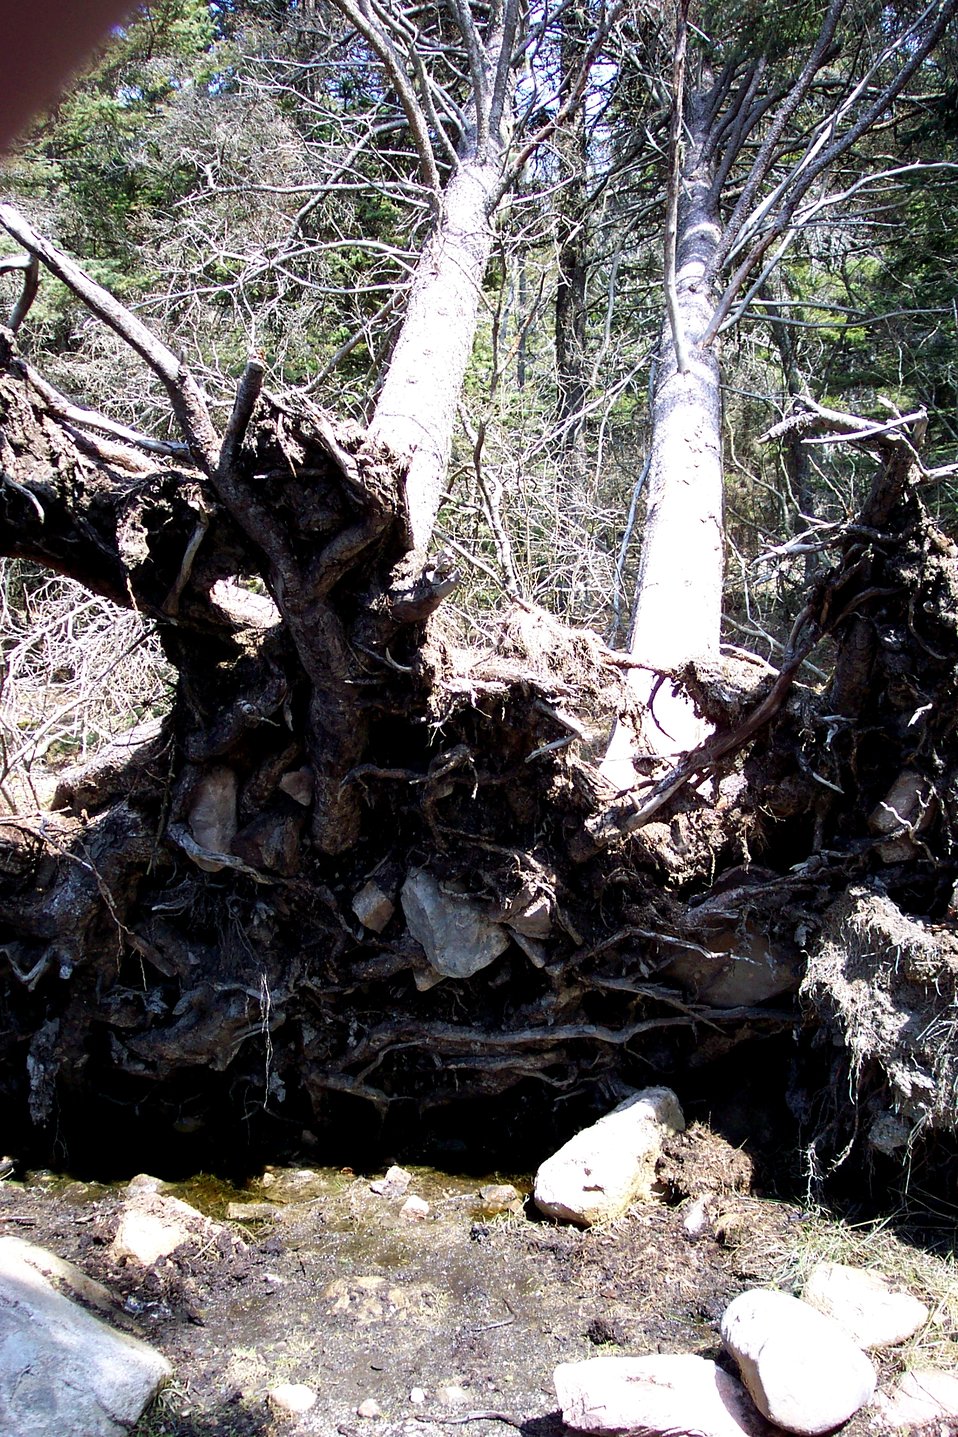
Trees with intertwined roots blown down together on the Bass Harbor Head Lighthouse Trail.